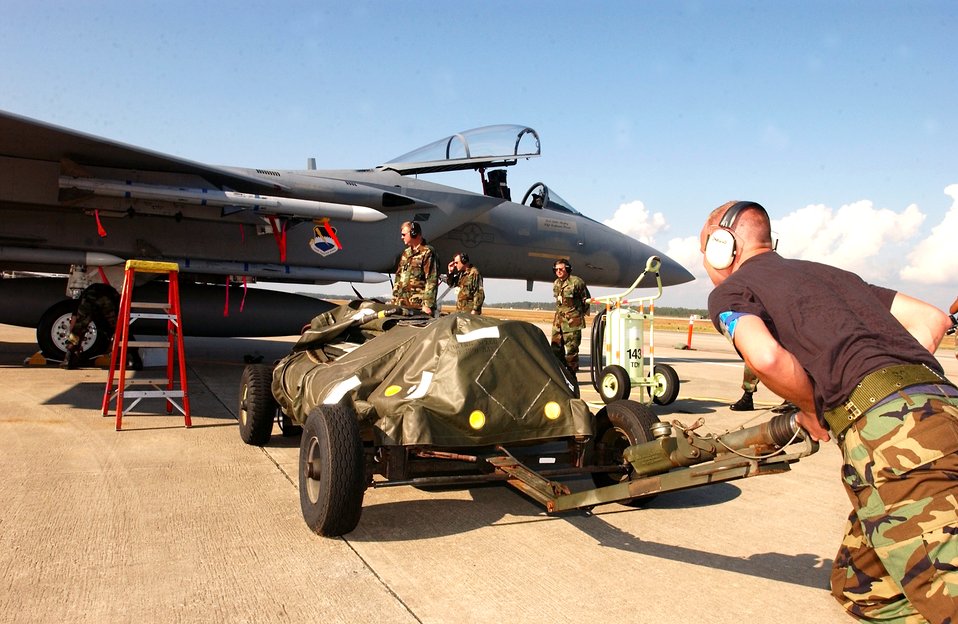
Maintainers mind William Tell details

TYNDALL AIR FORCE BASE, Fla. -- Airmen from the 95th Fighter Squadron's aircraft maintenance unit participate in the flightline load during William Tell 2004 here. This is the 50th anniversary of the William Tell competition, which tests an aircrew's ability to perform under combat conditions.